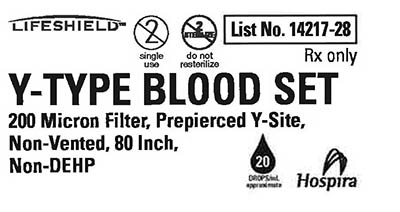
RECALLED – Blood sets used for the administration of blood and blood products

August 13, 2013 – Product Recall – Hospira Issues Important Safety Information for Blood Sets.